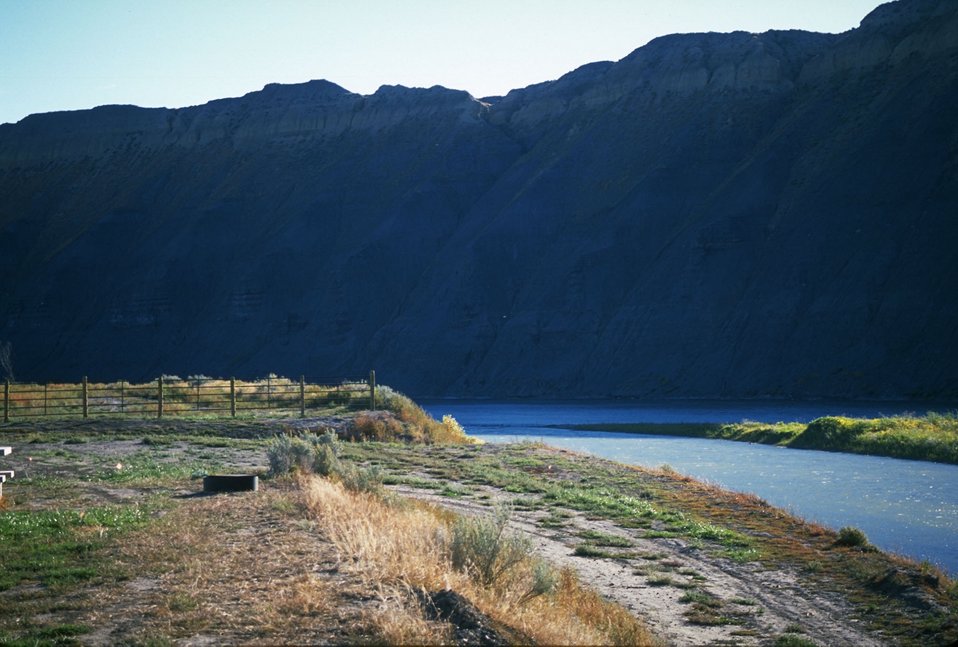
Missouri River near Fort Benton